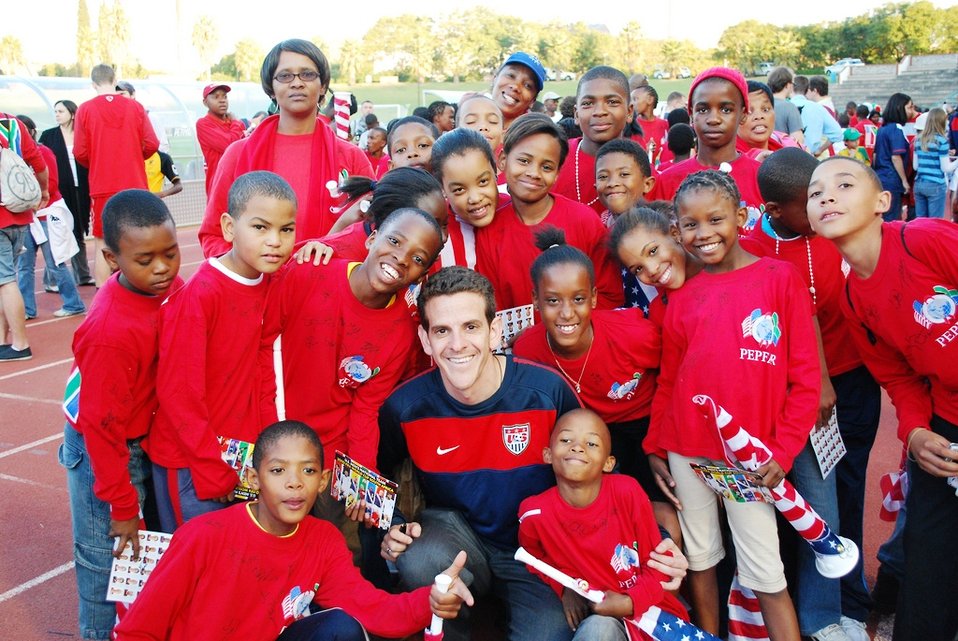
U.S. National Soccer Team Member Speaks With South African Students

U.S. National Soccer Team Spokesman Michael Kammarman speaks with South African students at the U.S. National Soccer Team's open practice session at the Pliditch Stadium in Pretoria, South Africa, on June 6, 2010. The U.S. National Soccer Team is preparing for the 2010 World Cup in South Africa.